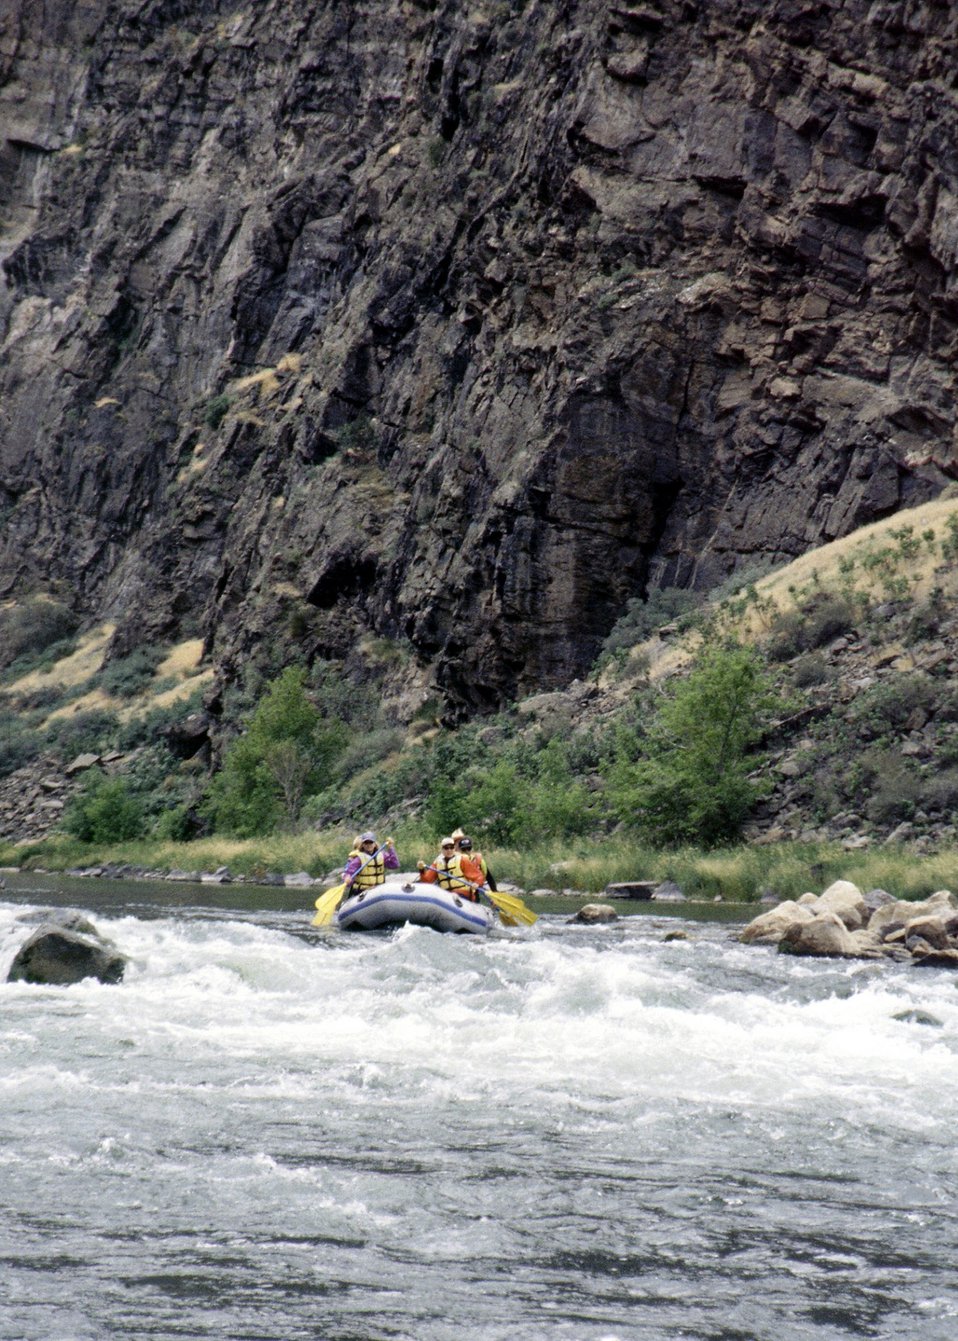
Rafting